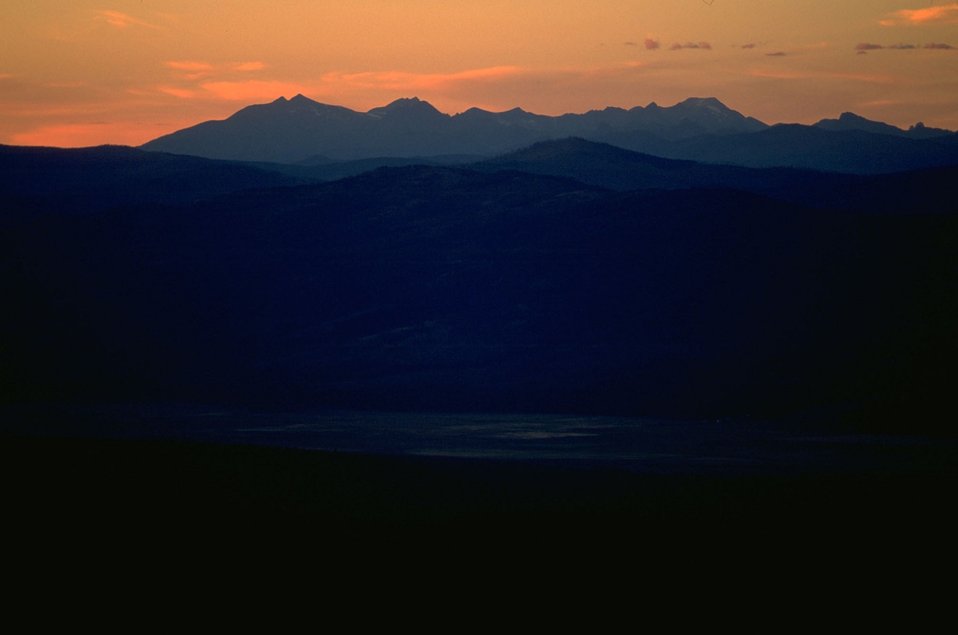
Garnet Back Country Byway--sunrise view from overlook